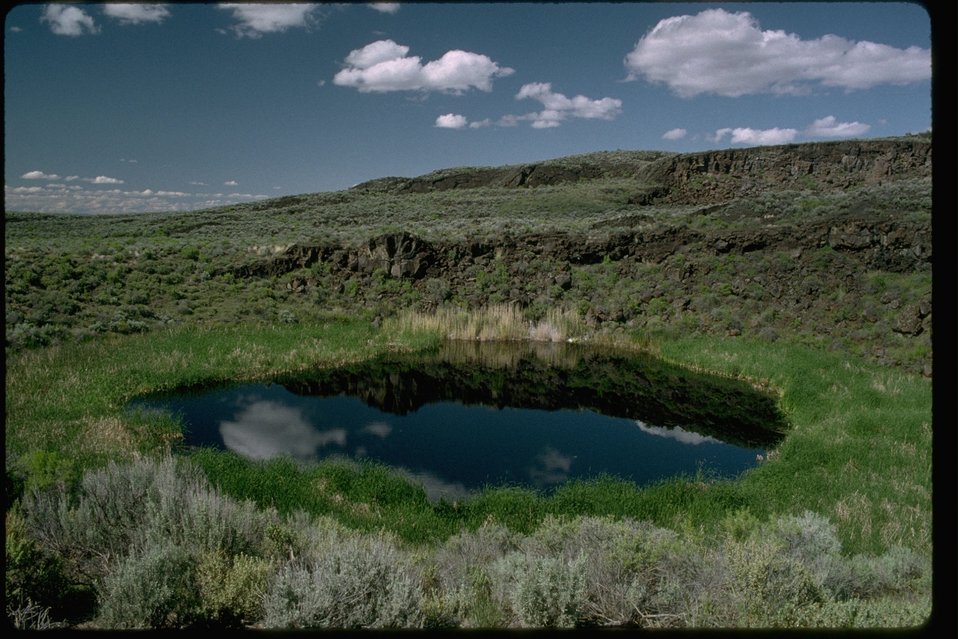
Malheur Maar in the Diamond Craters Outstanding Natural Area near Diamond, Oregon.